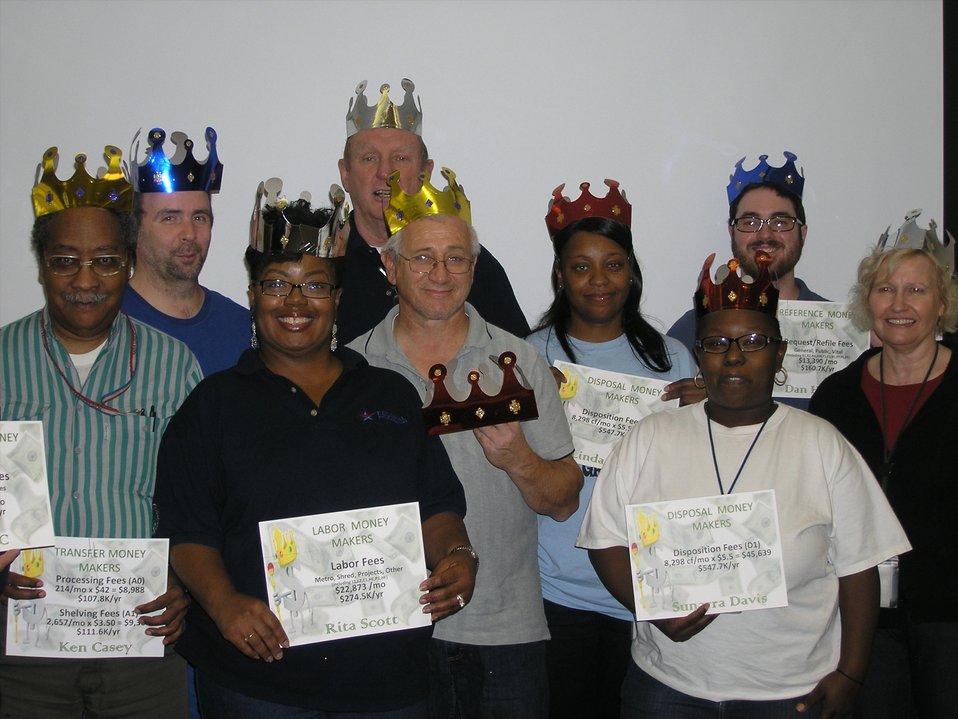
Ken Casey, Jose Scott, Rita Scott, Ron Bean, Andy Furimsky, Linda Smith, Sunarra Davis, Danny Hayes, and Pam Wegner at an awards ceremony - these are our Cash Kings, making money for our Federal Records Center Program; Location: Chicago Federal Records Center, Chicago, IL